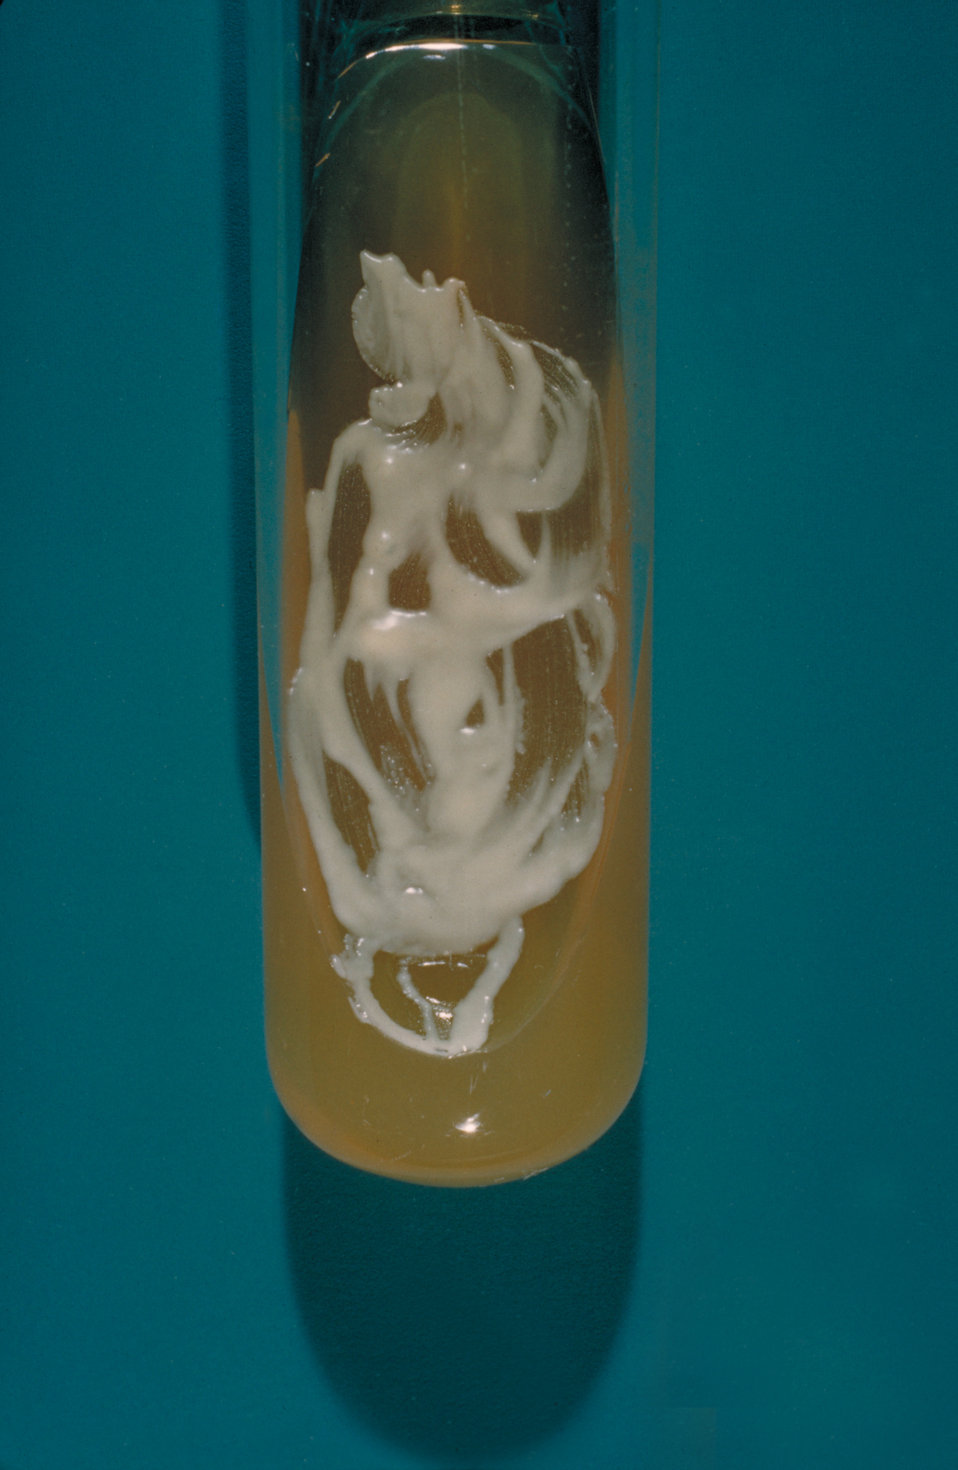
This is a Sabouraud's dextrose agar slant culture of Sporothrix schenckii.